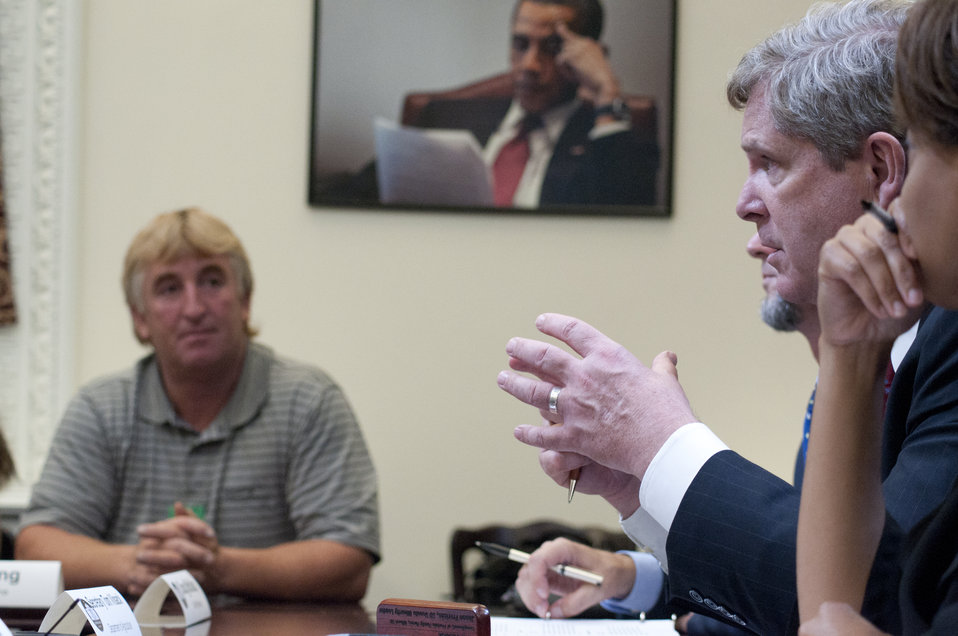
On Wednesday, Jul. 6, 2011, Agriculture Secretary Tom Vilsack attended a meeting at the White House in Washington, DC, with President Barack Obama, the President's Domestic Policy Adviser Melody Barnes and rural communities leaders from across the country for the White House Rural Champions of Change event. The purpose of this meeting is to strengthen rural communities and promote economic growth. Prior to coming here, they were posed with a question about, what should/should not the government be doing to strengthen rural communities and promote economic growth.